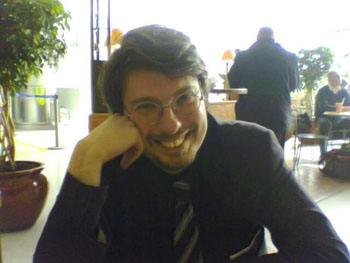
Photograph of Gabriele Marranci taken by Desidera Flores in April 2006. Free distribution. No copyright.